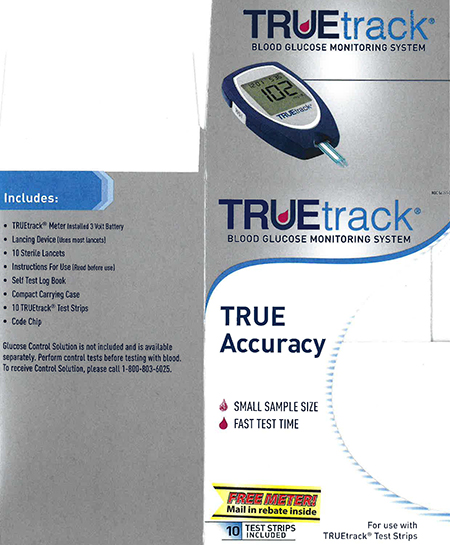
RECALLED – Blood Glucose Meters

January 2, 2014 – Product Recall – Nipro Diagnostics, Inc. Initiates Voluntary Recall of Certain TRUEbalance and TRUEtrack Blood Glucose Meters.